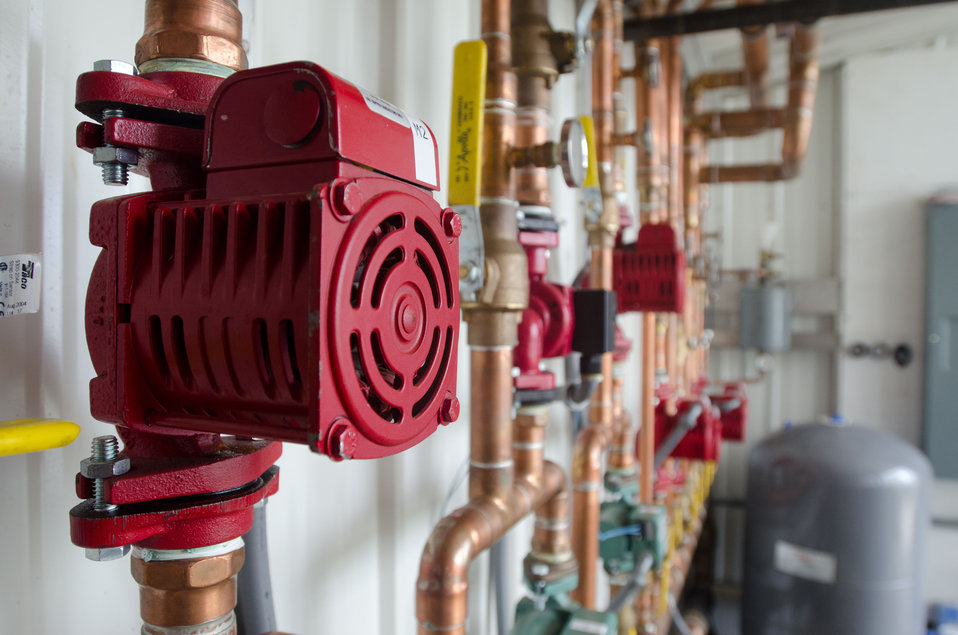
Computer controlled flow and temperature control panel at Good Harvest Farm on April 19, 2011 in Strasburg, PA, completed Rural Energy for America Program (REAP) grant supported renovation six months ago that replaced an 80-year old structure with a new 4,000 sq. ft. facility that features energy efficient glass roof with curtains that block or trap heat, radiant heaters in or above the floor, and the replacement of an oil-fired hot-air furnaces with propane fueled boilers that supply fin-tube and cement embedded tube elements with hot water. With current fuel prices, there is a projected 2011 energy cost savings of more than $20,000; a 40% reduction in energy costs – exceeding projected savings. Plant health and quality has improved and been more consistent because the temperature and humidity is computer controlled and distributed evenly throughout the facility. Utilizing sensors and a roof mounted weather station the system can maintain four different climate zones 24-hours a day. Two 1,000,000 BTU propane fueled boilers heat the water to 190 degrees for the 8,000 feet of fin-tube heating elements were used where the original foundation, and the 8,000 feet of tubing that was embedded in a new cement foundation. After traveling through the energy efficient system, water only looses 20 degrees. When temperatures become to hot, motorized roof vents open to allow rising heat to escape; a 98% energy savings from massive fans that previously forced air out. Both systems create a microclimate in and round the plant trays in the growing and sales room. Representing Good Harvest Farm Chris Powell says, “You don’t need to have a lot of land to have a lot of green houses. There are places in cities where vegetables are grow on store roof tops and selling them below in the same structure.”